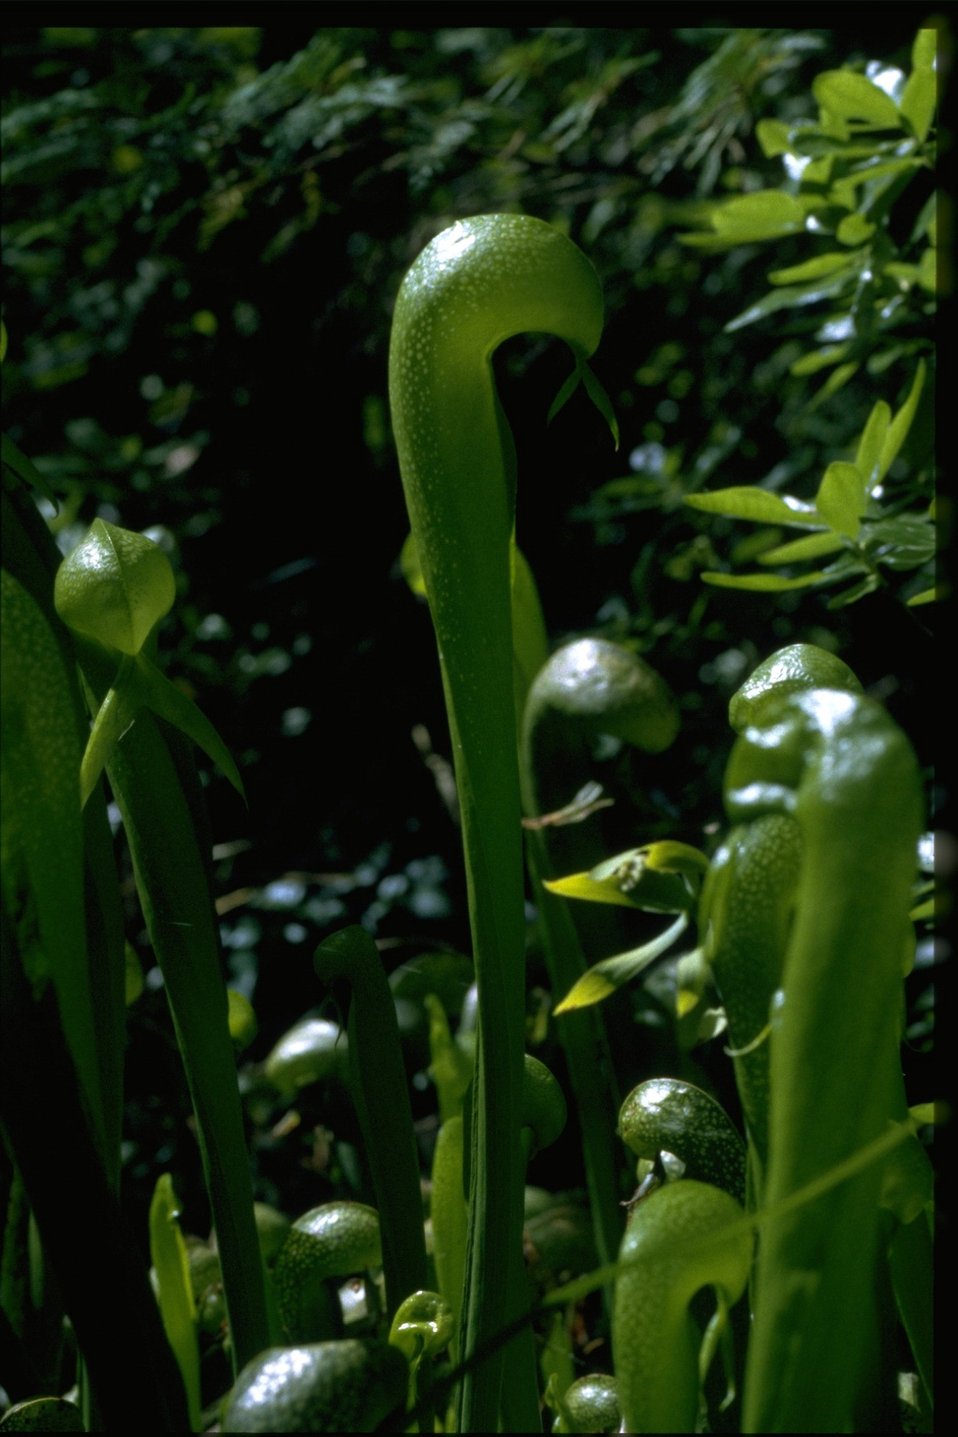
Closeup shot of Cobra Lily, Darlingtonia californica.